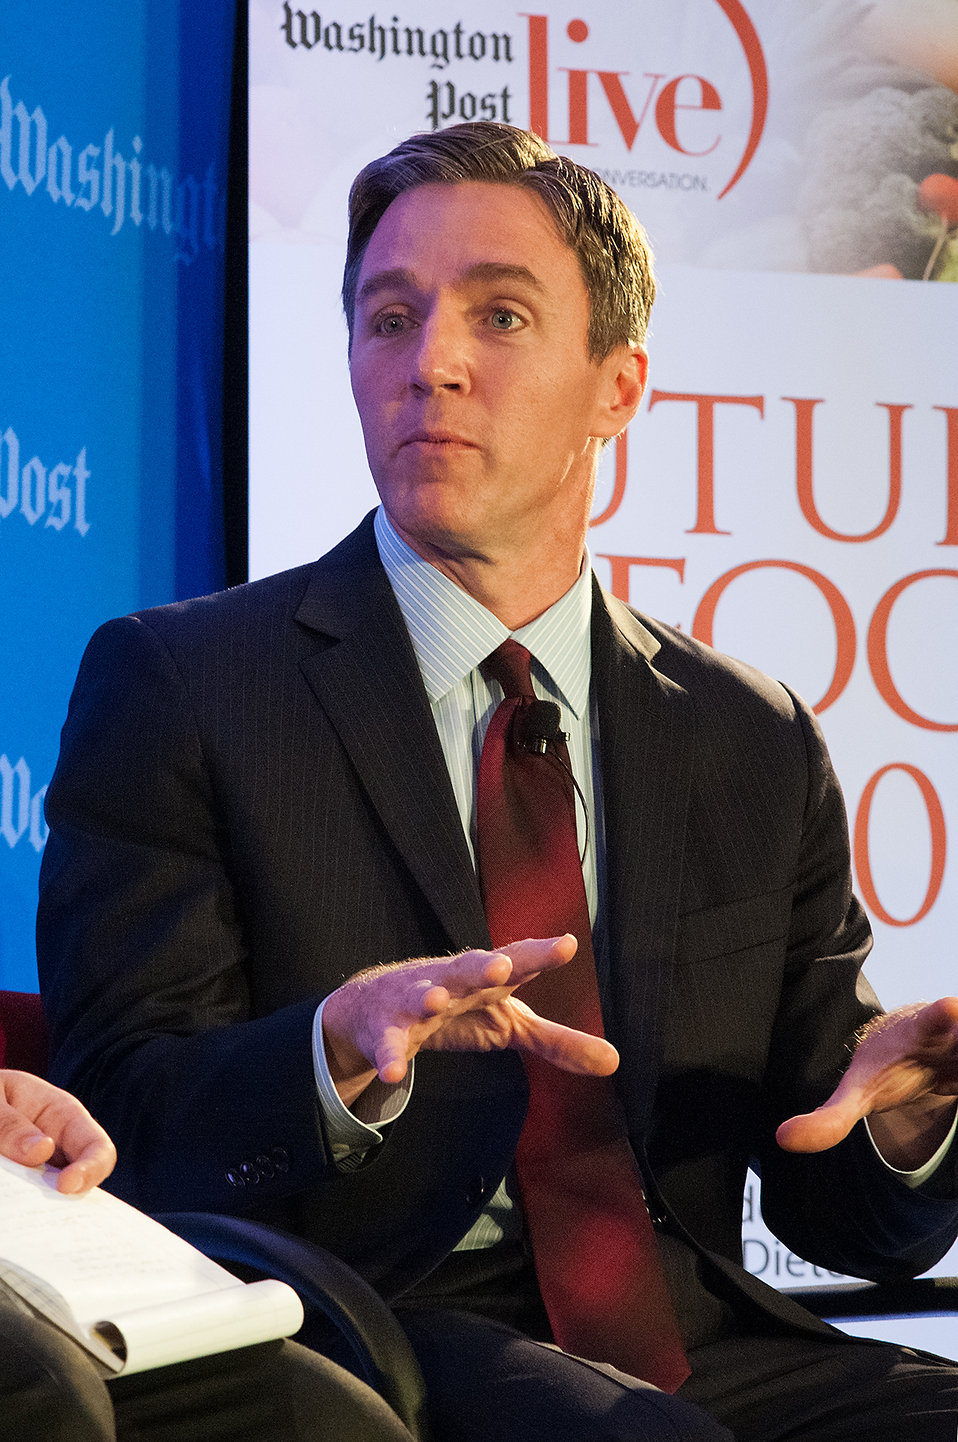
Unilever North America Foods Vice President Mike Faherty discusses Industry Speaks: What Retailers, Processors and Manufacturers are Doing, during the annual live forum, “Future of Food: Building a Sustainable Food System 2013,” sponsored by the Washington Post Live in Washington, D.C. on Wednesday, May 22, 2013. Agriculture Secretary Tom Vilsack, leading agricultural, government and nutrition experts discussed expanding healthy, sustainable food systems including public-private partnerships, the market’s role in nutrition and the future of agricultural innovation.